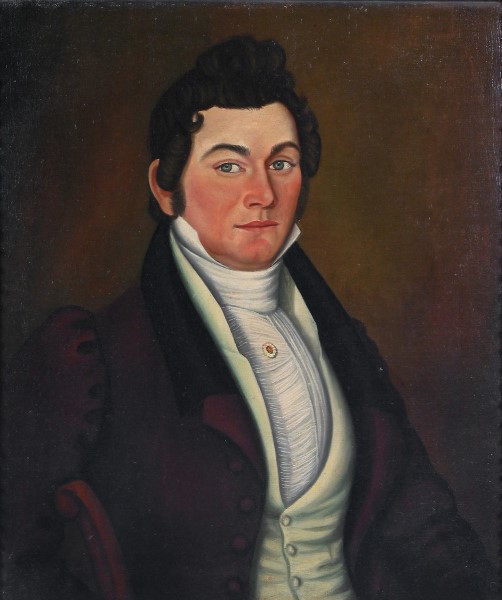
'Gentleman in a Brown Frock Coat' (attributed to Micah Williams)